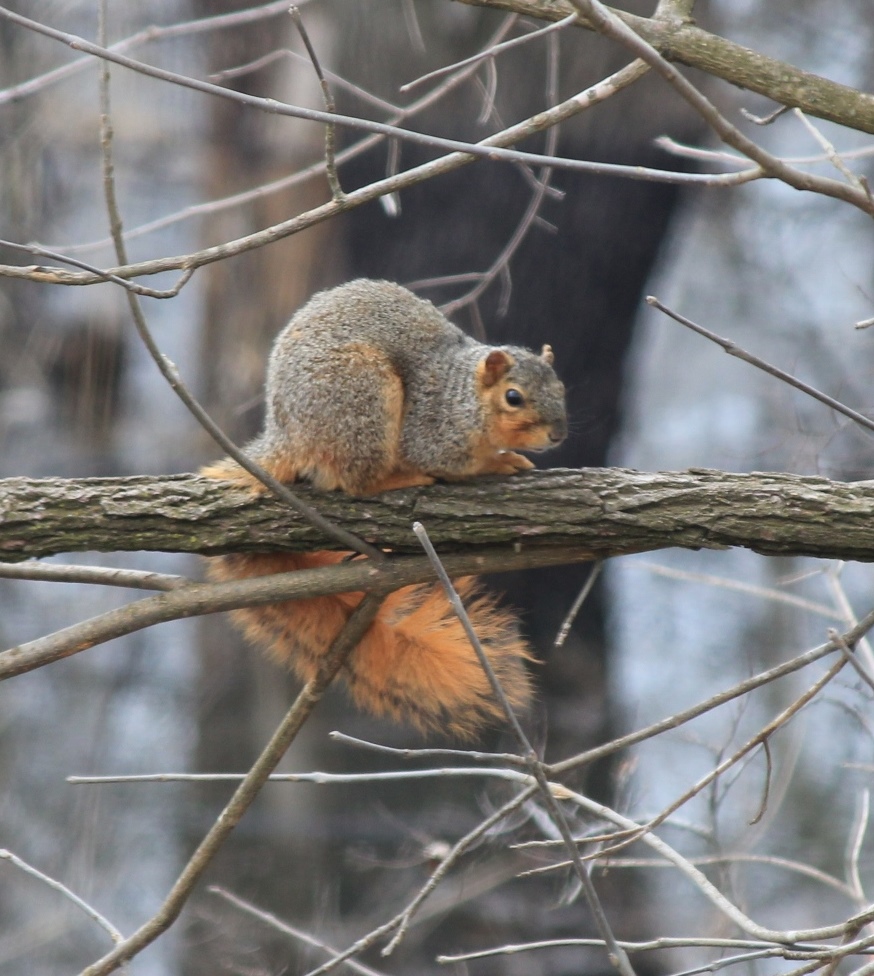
Squirrel